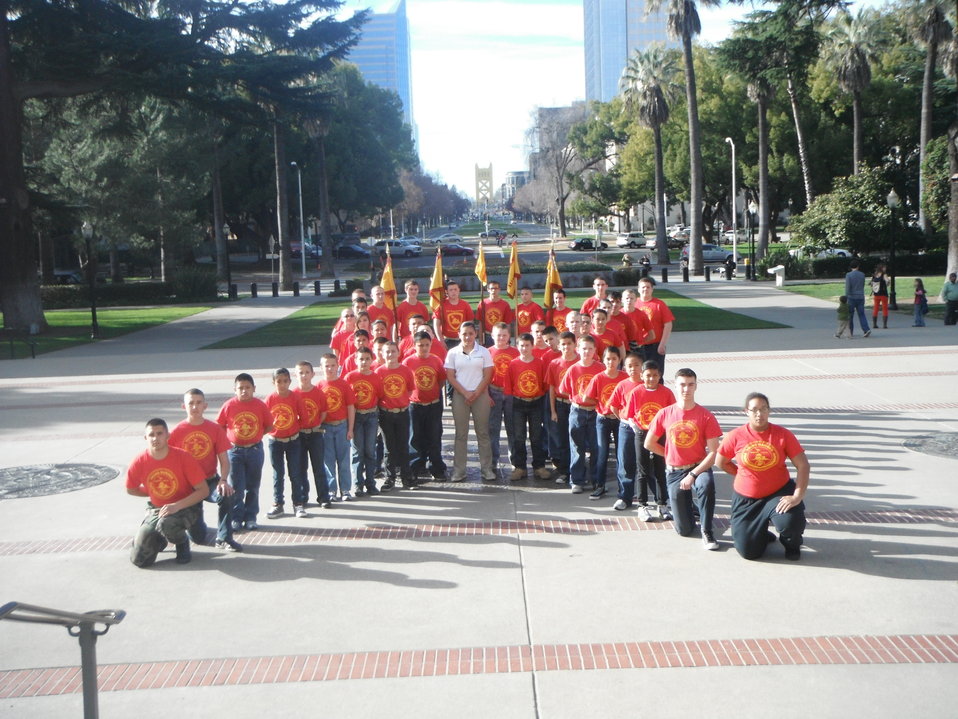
Ray Jacobs Young Marines, NDFW 2013

Sacramento, Ca. National Drug Facts Week Events, Feb. 2, 2013.